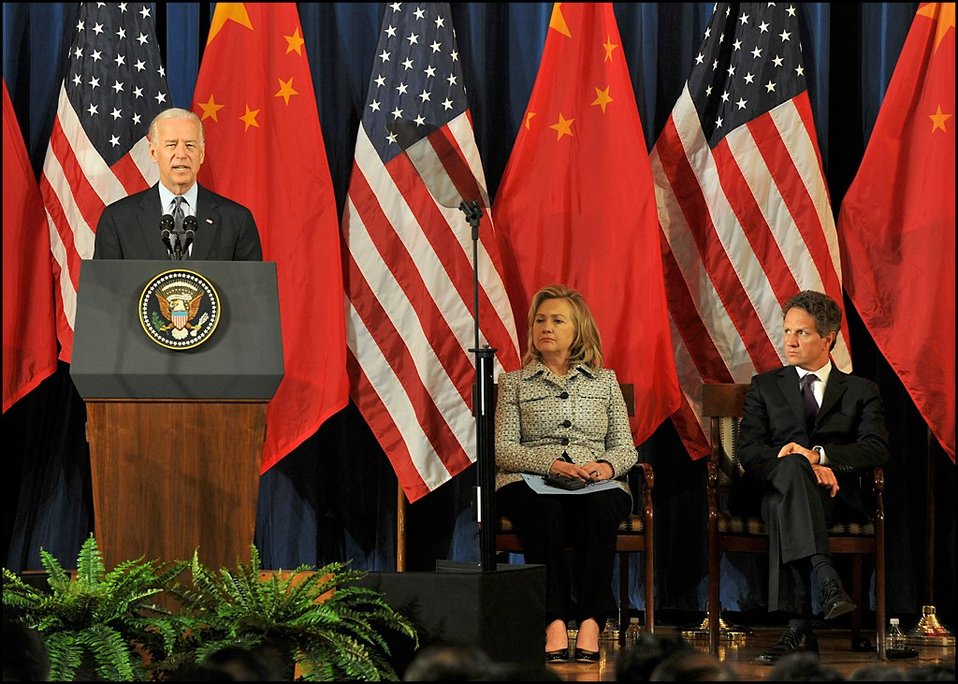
U.S.-China Strategic and Economic Dialogue

Secretary of State Hillary Clinton and Secretary of the Treasury Tim Geithner listen to Vice President Joe Biden's remarks at the opening session of the S&ED.